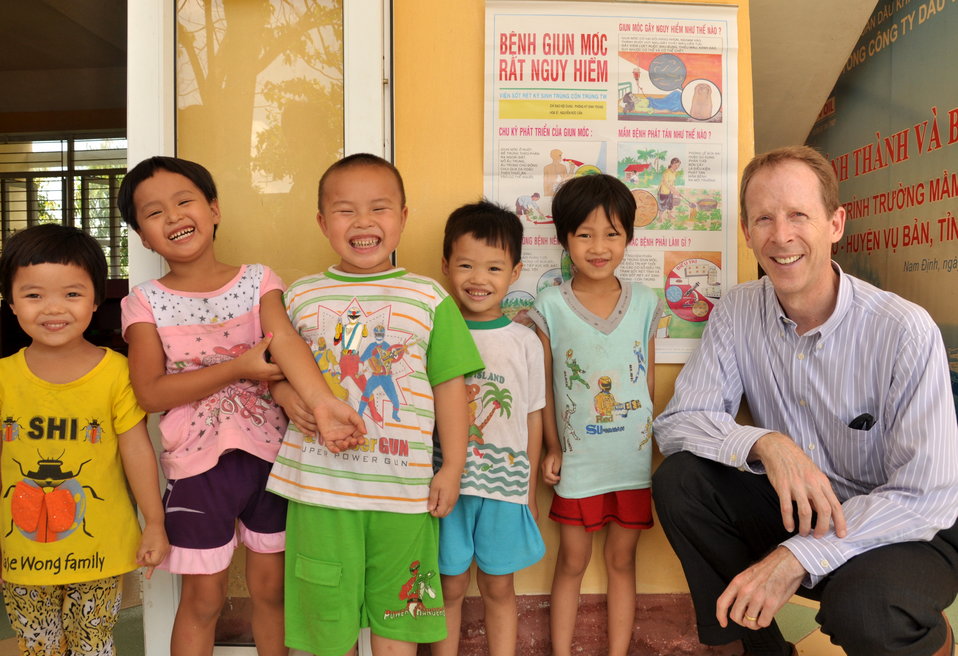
USAID Delivers Deworming Medication to Kindergartners in Nam Dinh Province

Children of Vietnam's Nam Dinh Province receive deworming medicine in a program supported by USAID and World Vision Australia.
June 1, 2013